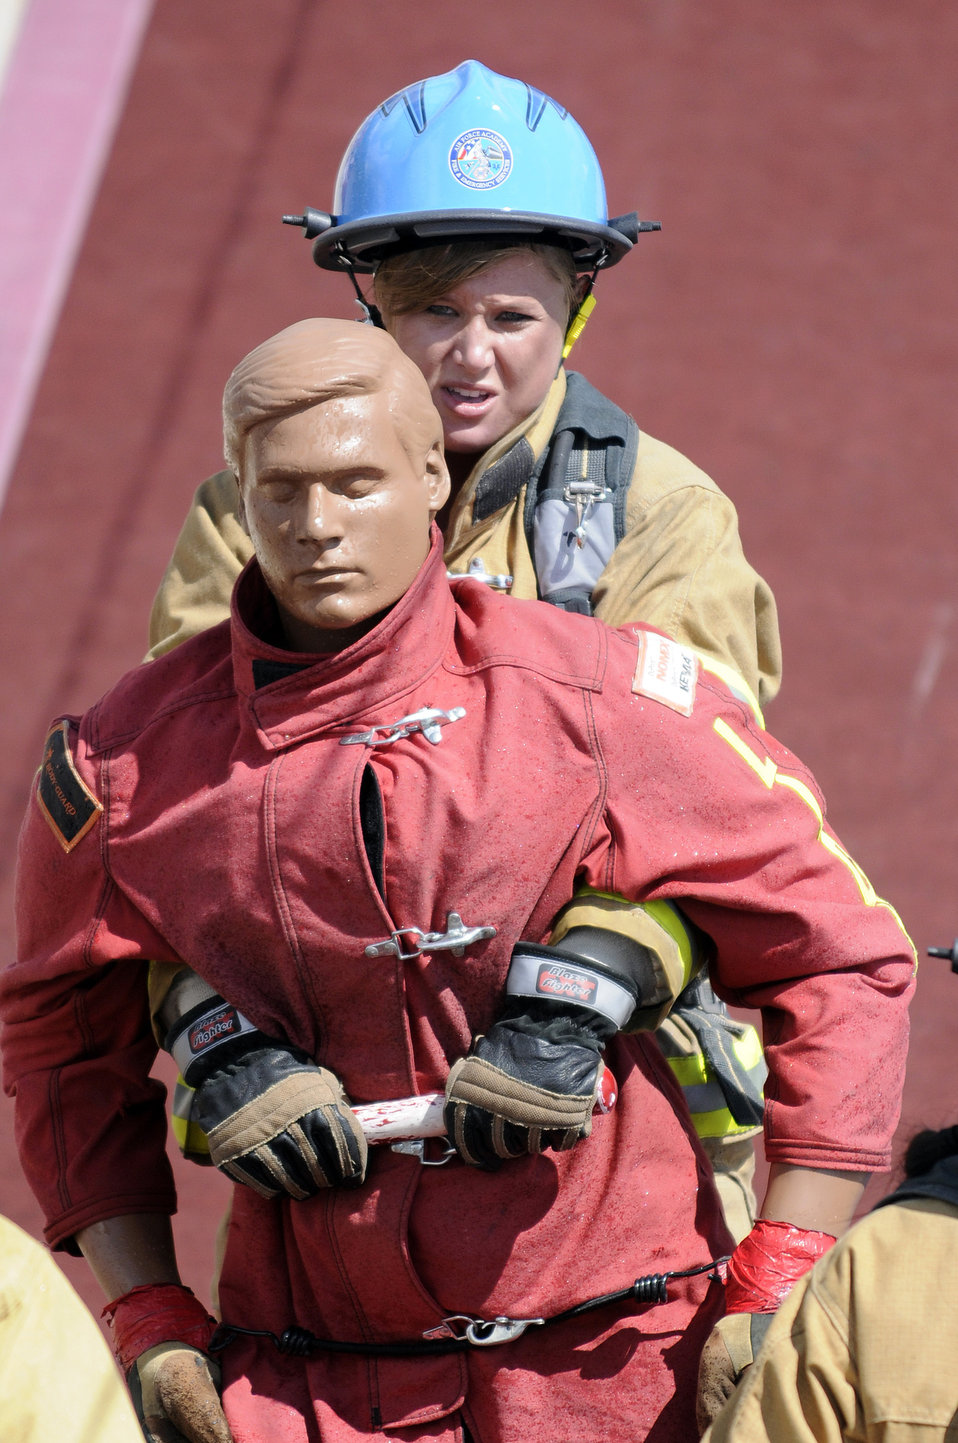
Firefighters Combat Challenge

Air Force Academy firefighter Airman 1st Class Jessica Morehouse drags the 175 pound